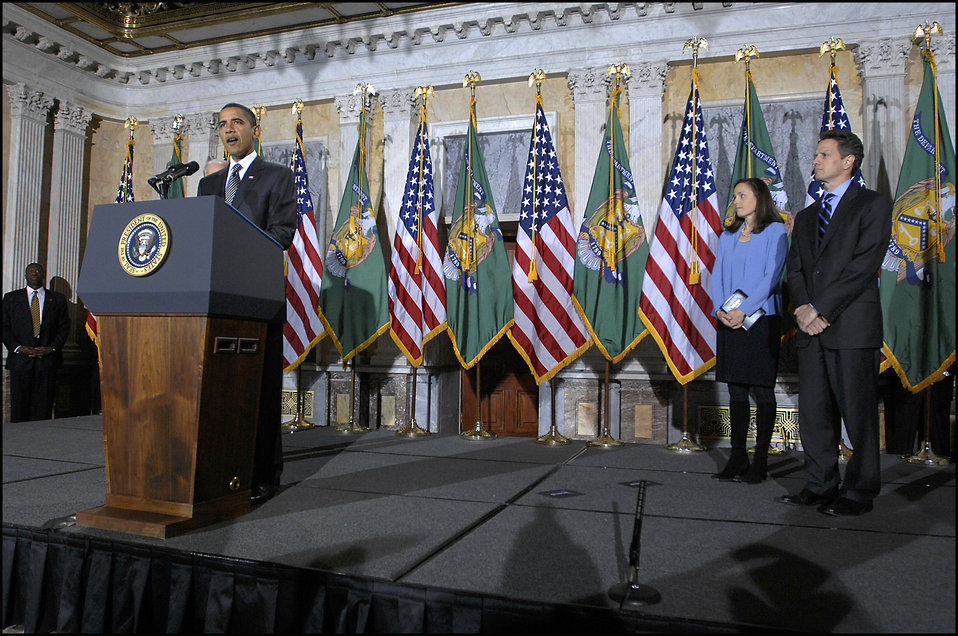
President Obama at Secretary Geithner's swearing-in

President Barack Obama speaking at Secretary Timothy F. Geithner’s swearing in ceremony on January 26, 2009. Secretary Geithner and his wife Carole look on.